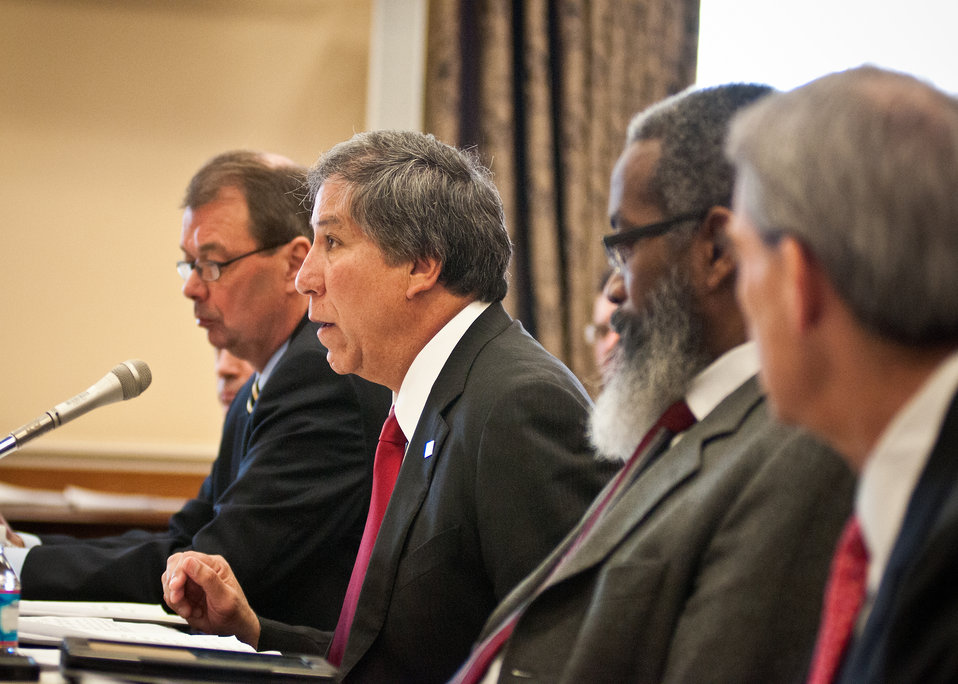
From left: Robert Keeney, Acting Administrator, Agricultural Marketing Service, Ed Avalos, Under Secretary, Marketing and Regulatory Programs and Michael Young, Budget Officer testifying on Capitol Hill before the House Agriculture Appropriations Subcommittee on fiscal year 2013 budget requests for Marketing and Regulatory Programs in Washington, D.C., Tuesday, March 6, 2012.